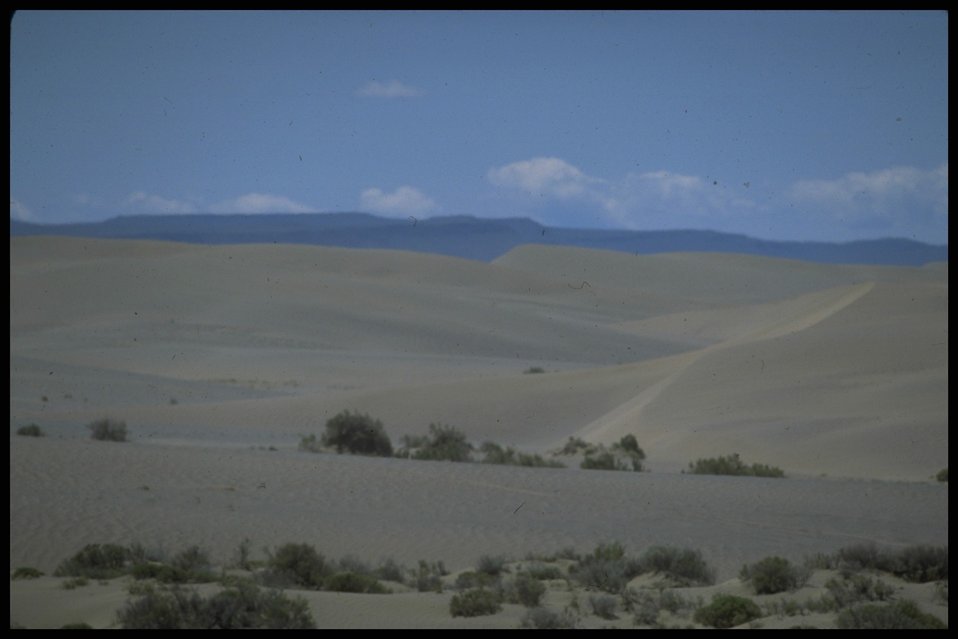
Scenic view of Sand Dunes in Christmas Valley, Lakeview District.